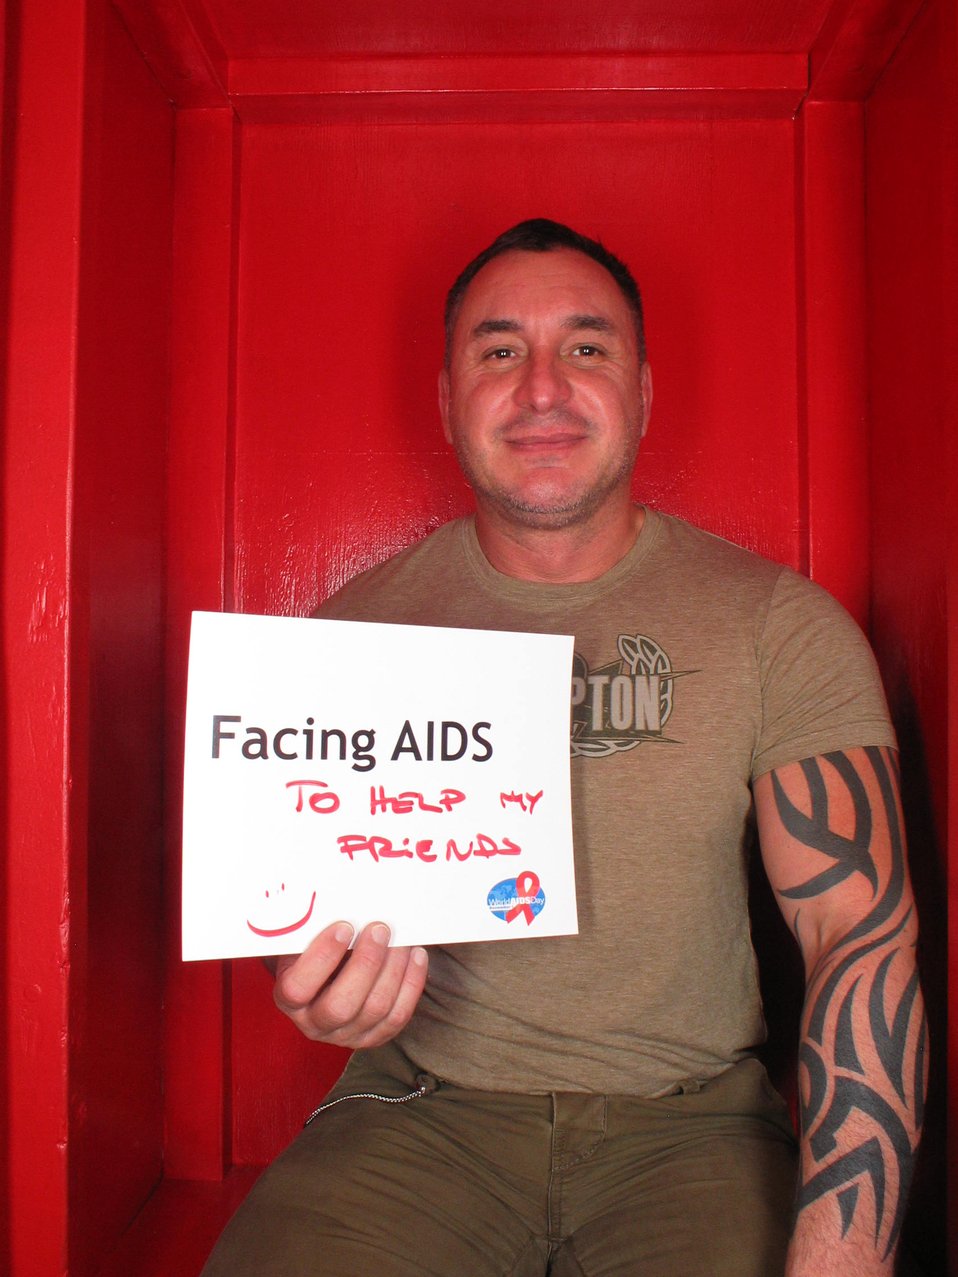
Facing AIDS to help my friends :)